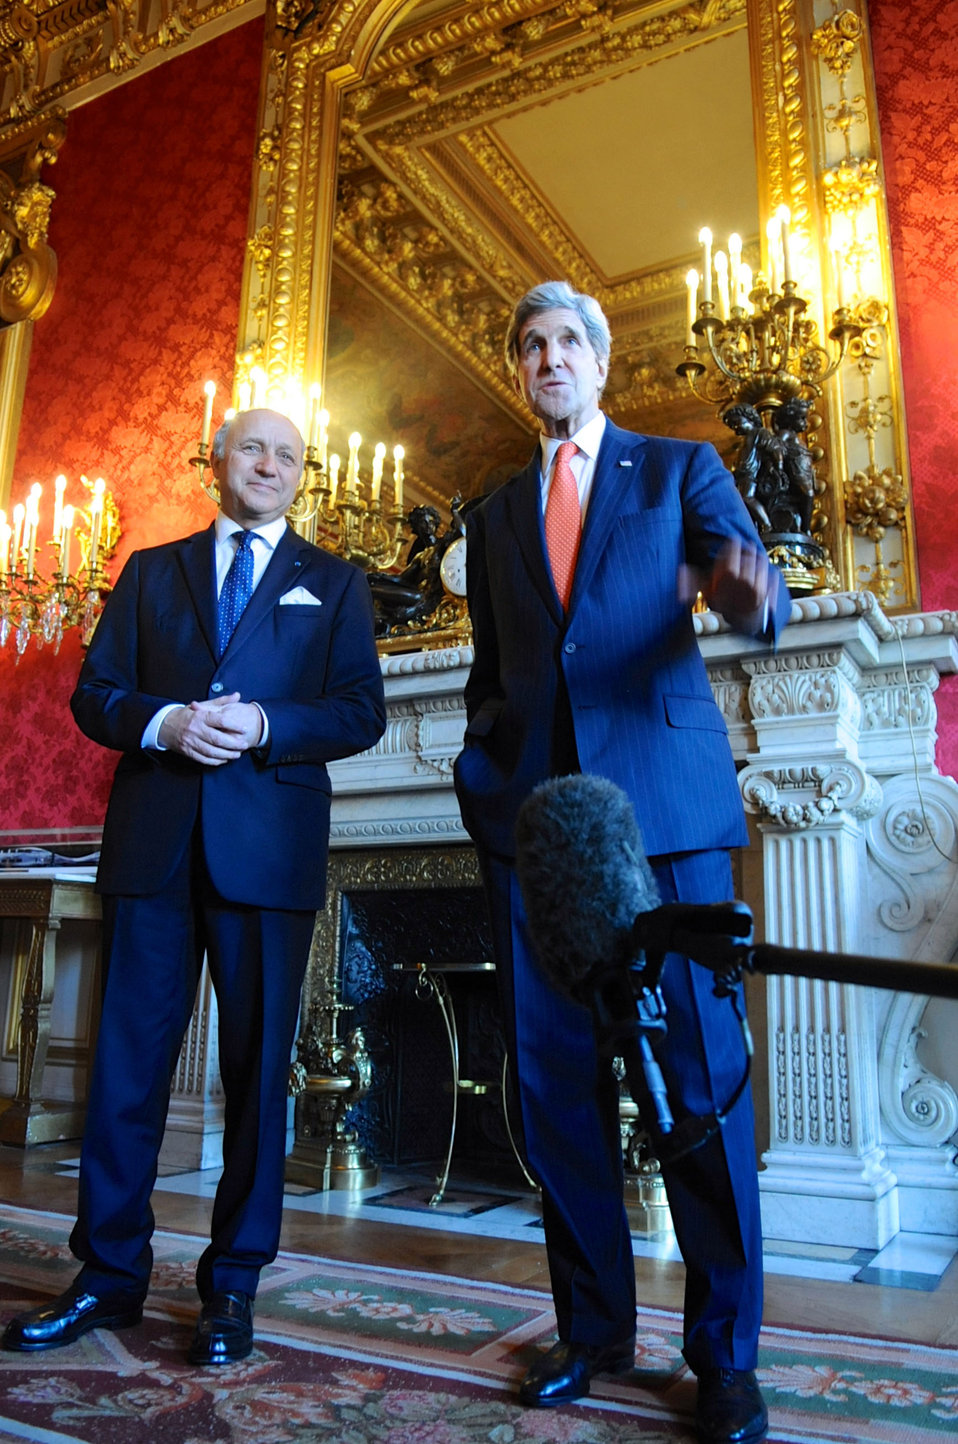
Secretary Kerry Speaks Before a Meeting With French Foreign Minister Fabius in Paris

U.S. Secretary of State John Kerry and French Foreign Minister Laurent Fabius speak with reporters before a bilateral meeting at the Quai d'Orsay in Paris, France, on January 13, 2014.